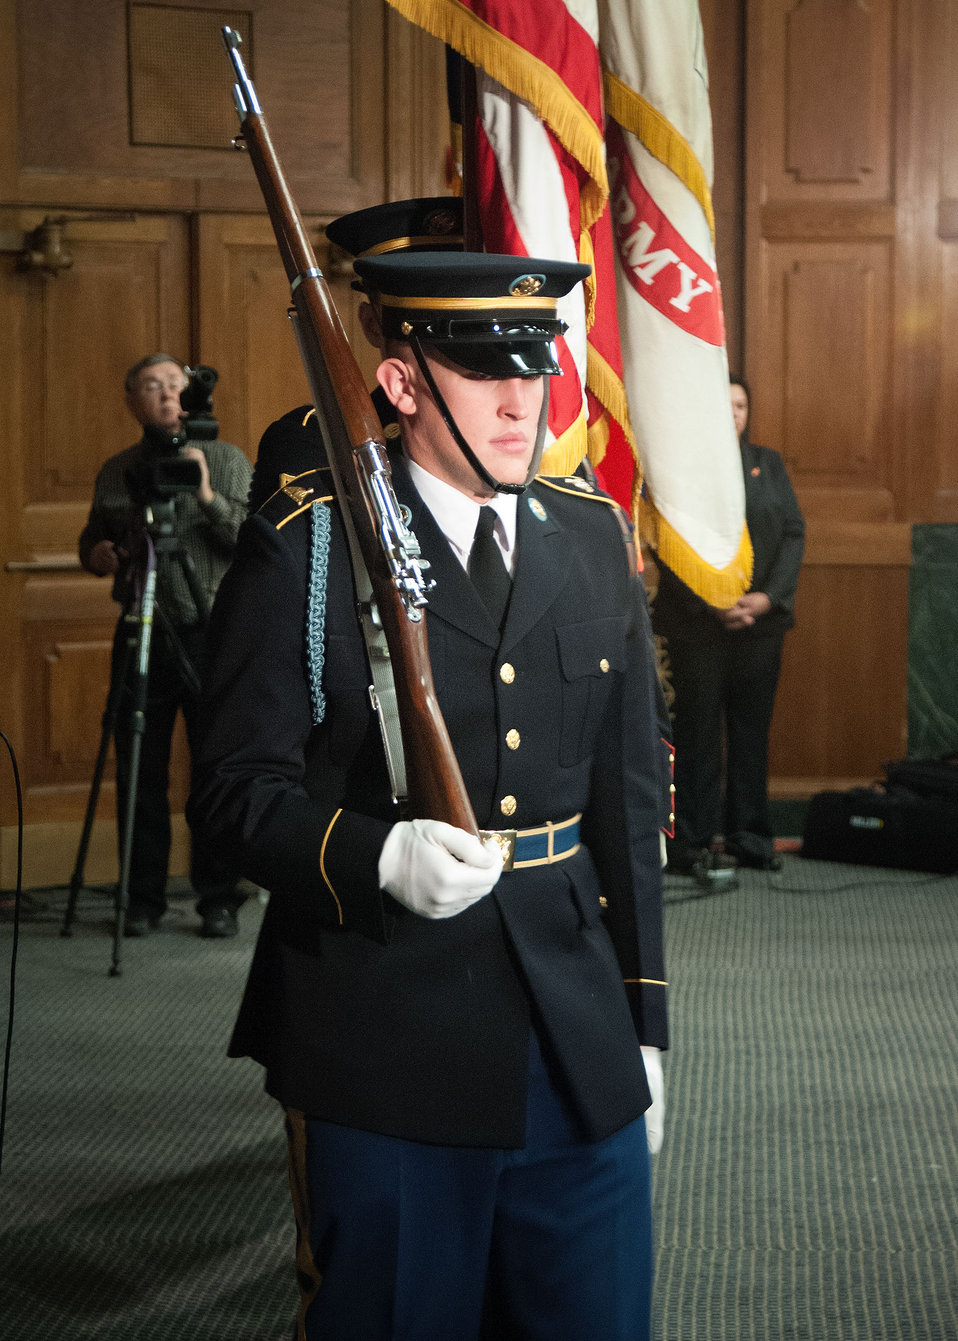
The U. S. Military District of Washington Joint Armed Forces Color Guard presents the Colors at the U.S. Department of Agriculture’s (USDA) Fourth Annual Cultural Transformation event held in Washington, D.C. on Tuesday, Dec. 4, 2012.